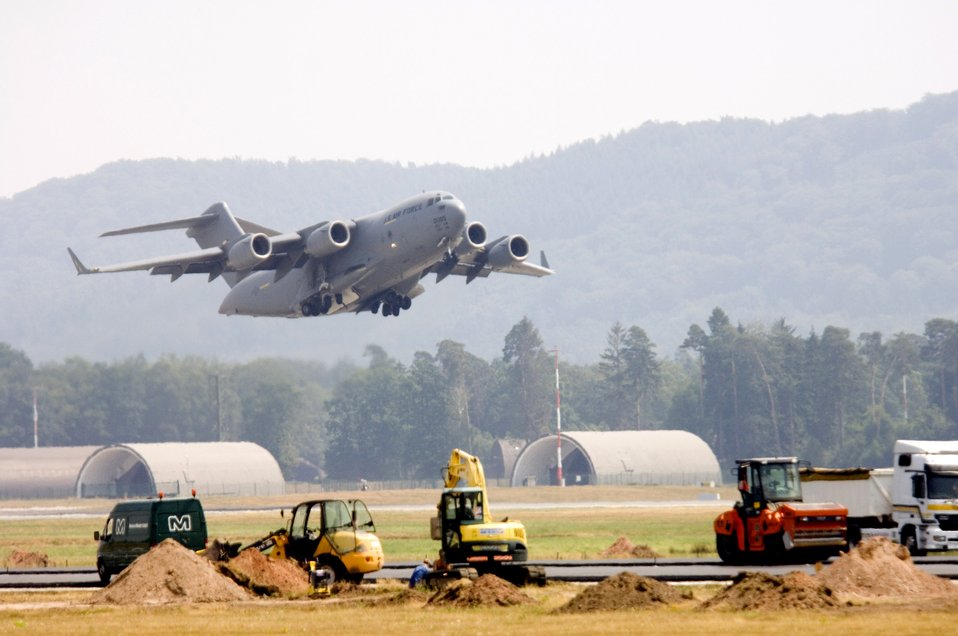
Ramstein's north airstrip receives makeover

A C-17 Globemaster III flies by as construction continues on the north runway at Ramstein Air Base, Germany, on July 28. The north runway will be extended 1,000 feet, allowing heavy air transports to take off fully loaded. The work began in mid-April and is one week ahead of the Jan. 1 completion date.